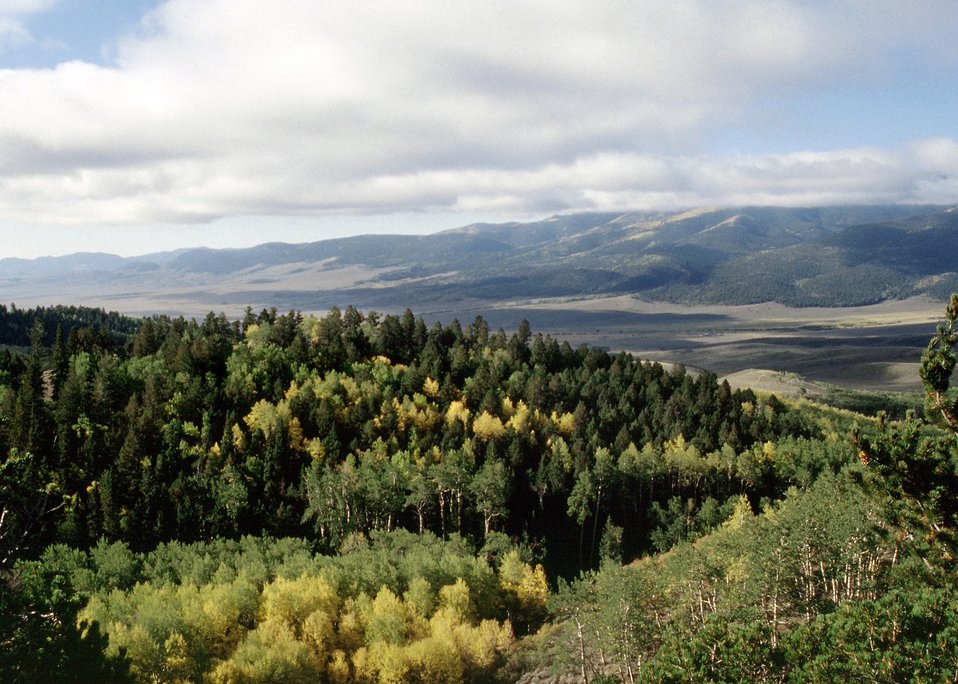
Aspen Trees Fall